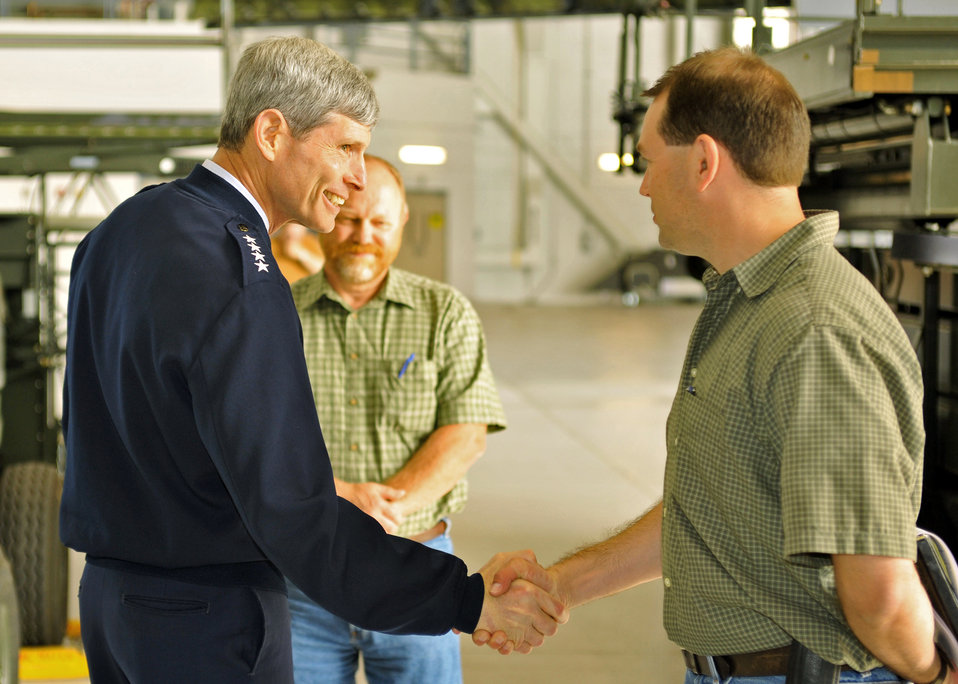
CSAF visit to Elmendorf AFB

Air Force Chief of Staff Gen. Norton Schwartz chats with Shawn Moser (right), 3rd Civil Engineer Squadron project manager, and Bob McElroy, 3rd CES construction manager, July 6 during his visit to Elmendorf Air Force Base, Alaska.